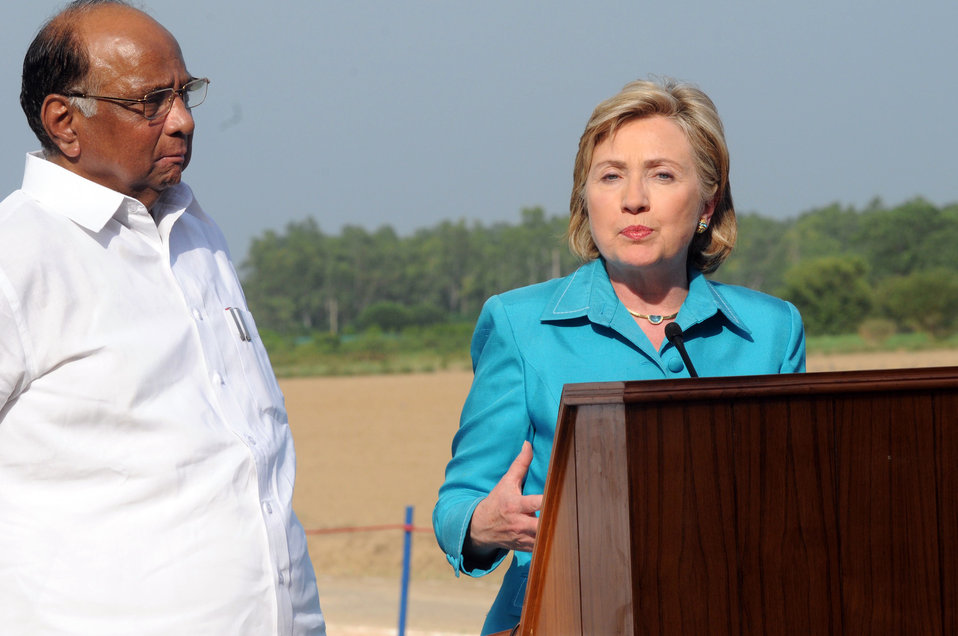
Secretary Clinton Visits Indian Agricultural Research Institute

U.S. Secretary of State Hillary Rodham Clinton, with Sharad Pawar, Minister of Agriculture, Consumer Affairs, Food and Public Distribution, addresses the audience at the Indian Council for Agricultural Research’s (ICAR) Indian Agricultural Research Institute (IARI) in Pusa, New Delhi, India July 19, 2009.